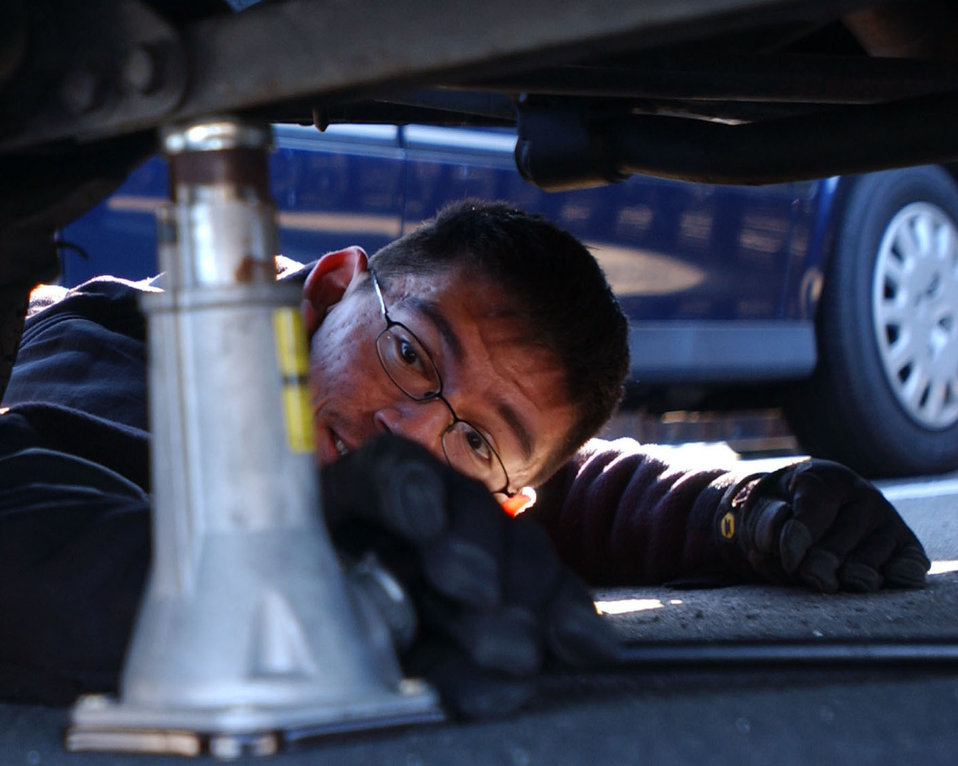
A few more inches

Airman 1st Class Guadalupe Tagares raises a truck to change a tire at Yokota Air Base, Japan. He is with the 374th Logistics Readiness Squadron.